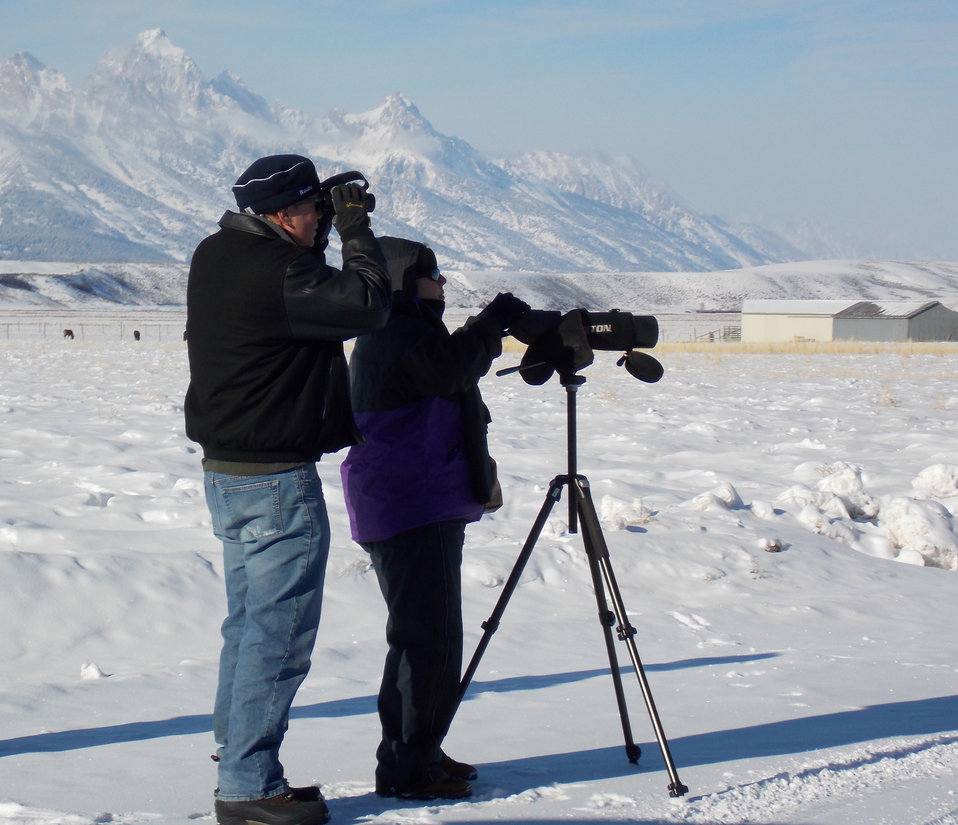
In the Shadow of the Teton Range

With the Teton Range in the background, a couple uses the spotting scope and binoculars provided on the tour to enjoy a variety of waterfowl on some nearby ponds.